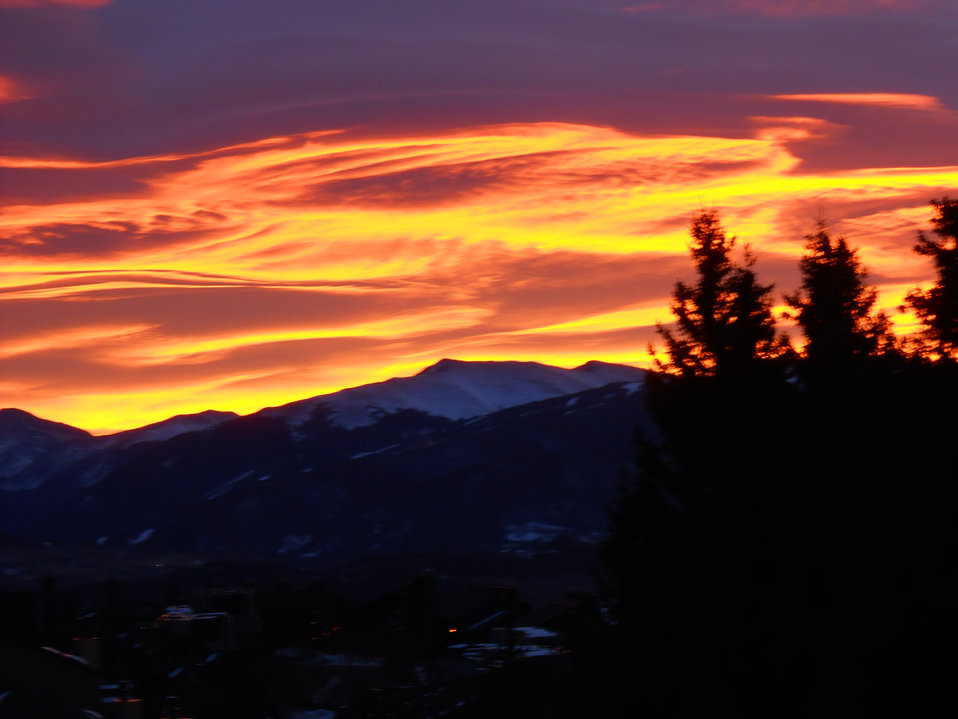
Colorado Mountain Sunrise

Sunrise at Silverthorne, Colorado.

Credit: Pedro 'Pete' Ramirez, Jr. / USFWS